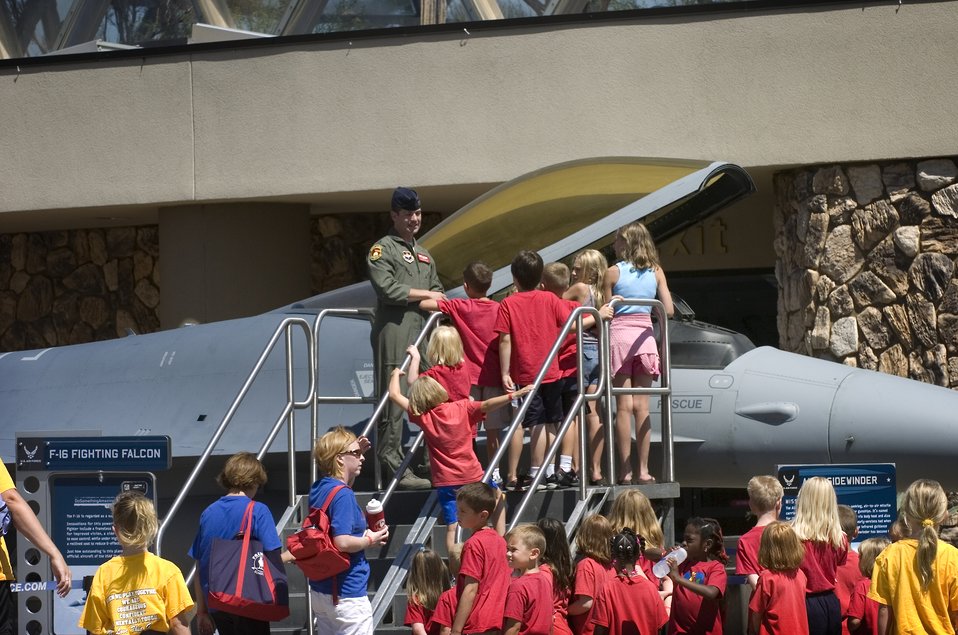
Air Force Week in the Heartland reaches out to Omaha zoo

Capt. Dan McGuire (in flightsuit) answers questions about the F-16 Fighting Falcon during Air Force Week in the Heartland Aug. 12 at the Henry Doorly Zoo in Omaha, Neb. Captain McGuire is a pilot with the 56th Training Squadron from Luke Air Force Base, Ariz. Zoo visitors also had the chance to see the Do Something Amazing display, a motion simulator and video simulators during Air Force Week in the Heartland.